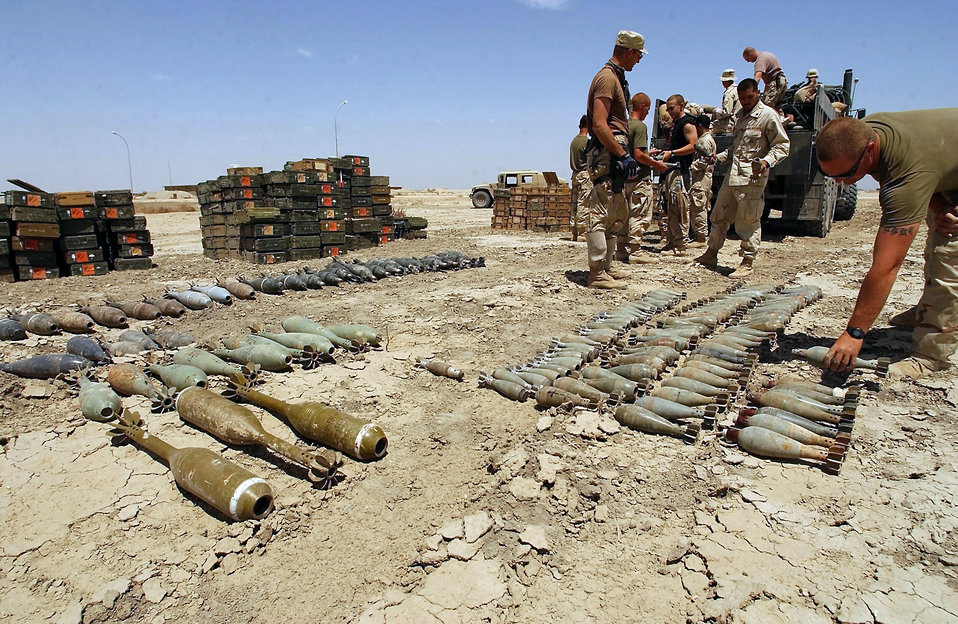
Quite a cache

OPERATION IRAQI FREEDOM -- Members of the 407th Explosive Ordnance Disposal Squadron and Marine Wing Support Squadron 371 from Yuma, Ariz., line up mortar rounds found near an Iraqi school south of An Nasiriyah on May 5. The EOD specialists found 305 mortar rounds during a sweep. They are deployed to Tallil Air Base in southern Iraq to support Operation Iraqi Freedom.